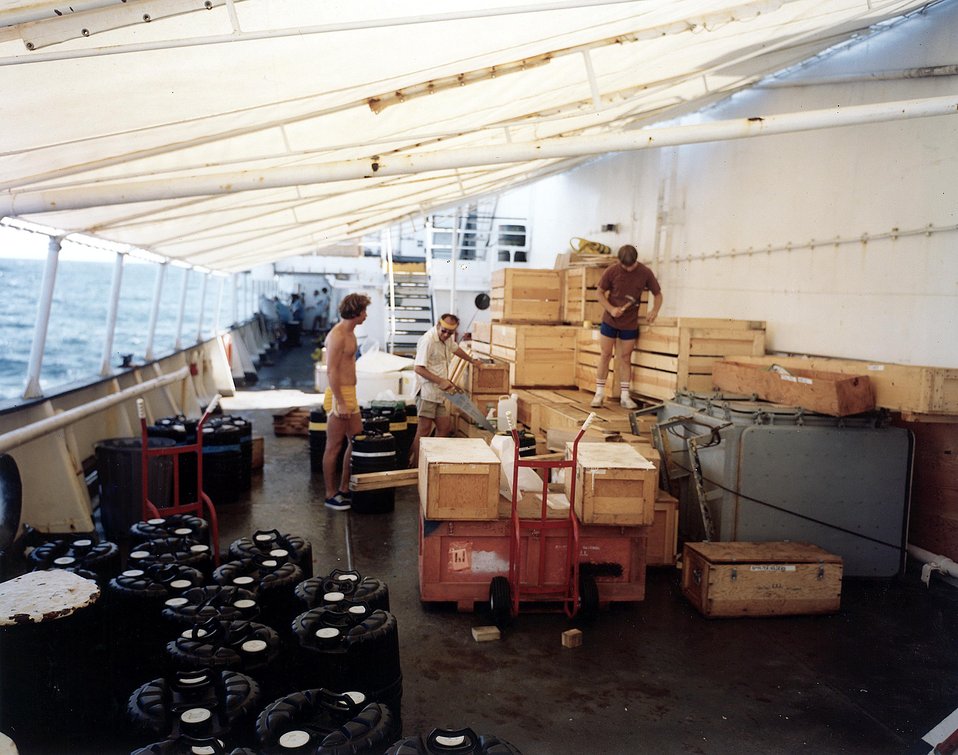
'Head of Nuclear Regulatory Panel Tours Closed Reactors'.